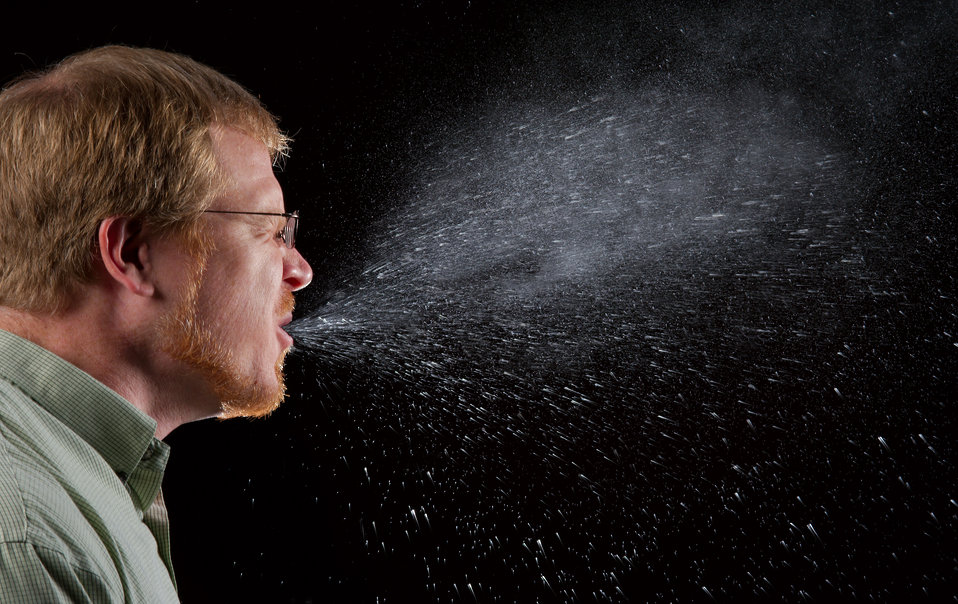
This 2009 photograph captured a sneeze in progress, revealing the plume of salivary droplets as they are expelled in a large cone-shaped array from this man's open mouth, thereby, dramatically illustrating the reason one needs to cover his/her mouth when coughing, or sneezing, in order to protect others from germ exposure.